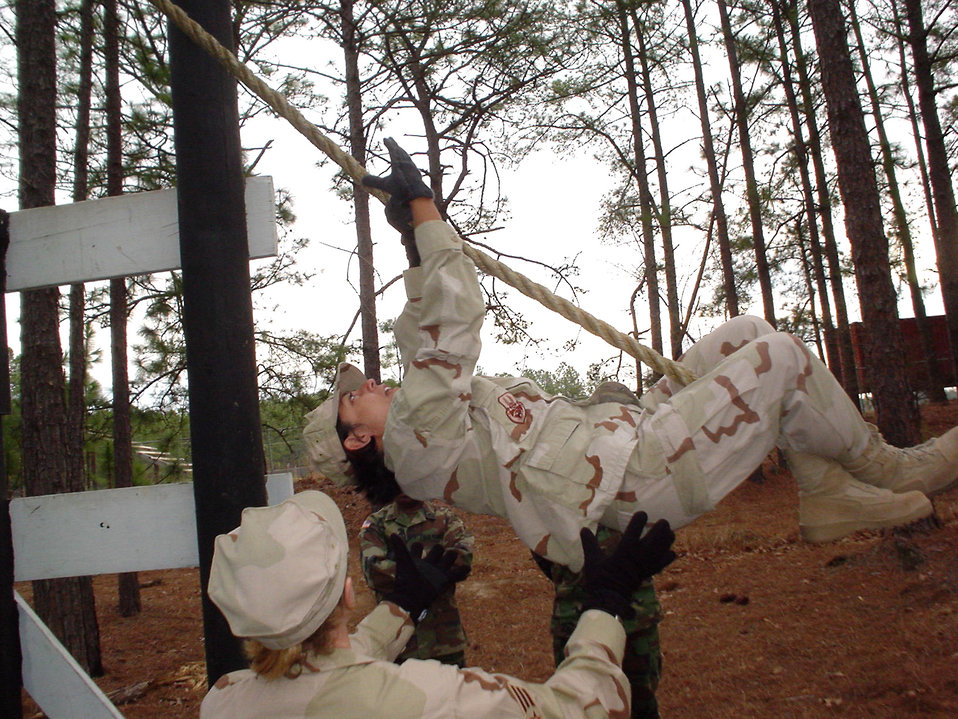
Putting the

Capt. Birma Gonzalez climbs to the top of an obstacle on the leadership reaction course Monday, March 27, 2006, at Fort Bragg, N.C., while Senior Airman Melanie Weaver spots for safety. Captain Gonzalez and Airman Weaver will deploy for a year with the Bagram Provincial Reconstruction Team in Afghanistan. Captain Gonzalez is from Barksdale Air Force Base, La., and Airman Weaver is from Andrews Air Force Base, Md.